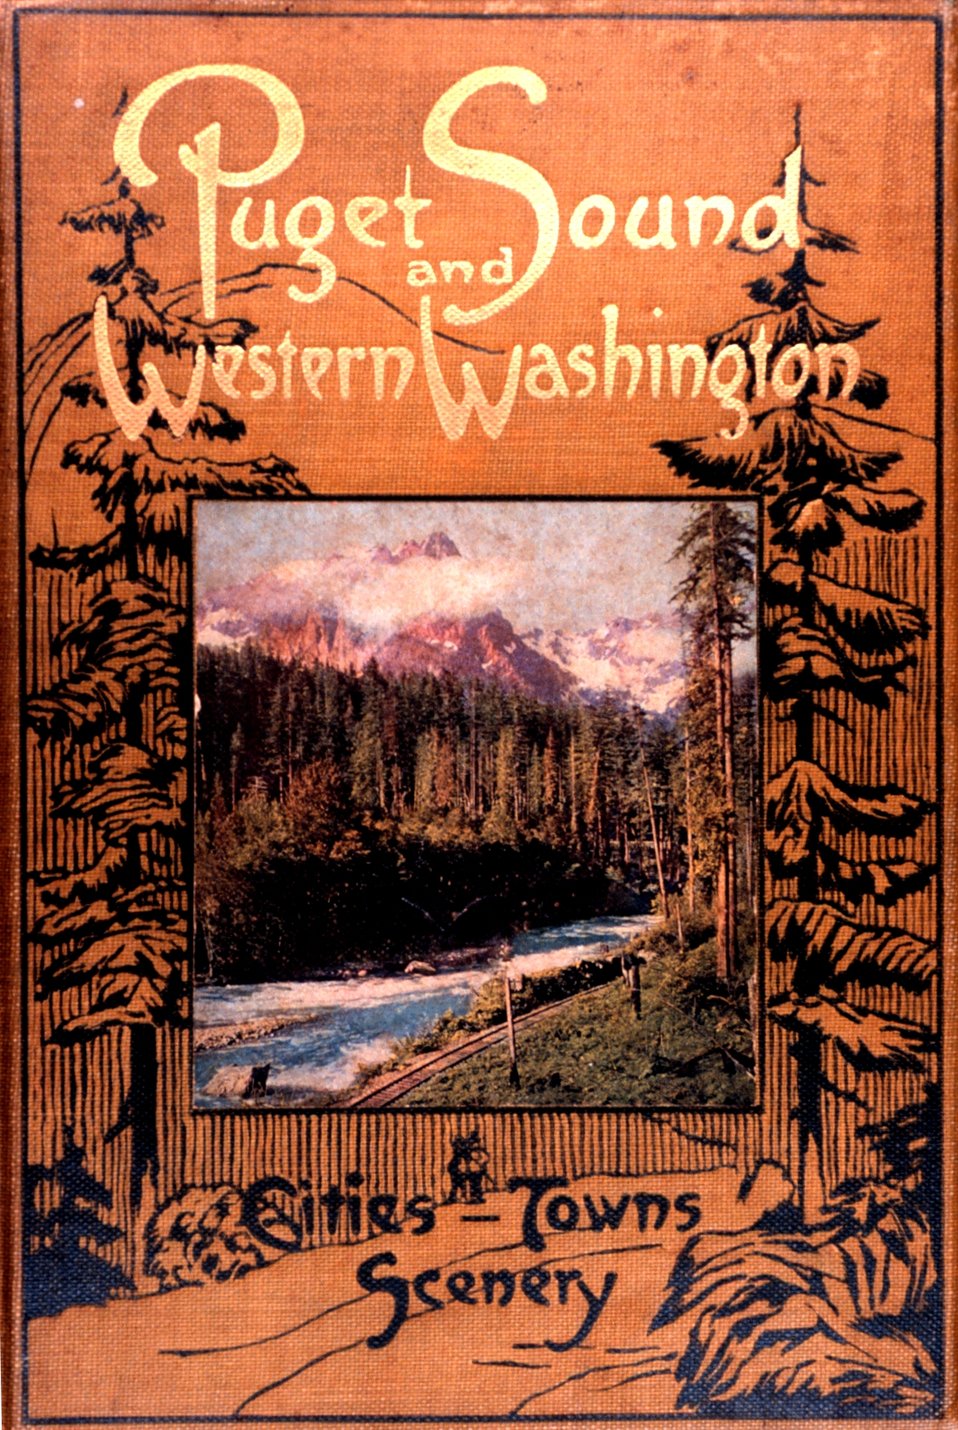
The cover to 'Puget Sound and Western Washington Cities-Towns Scenery', by Robert A. Reid, Robert A. Reid Publisher, Seattle, 1912.